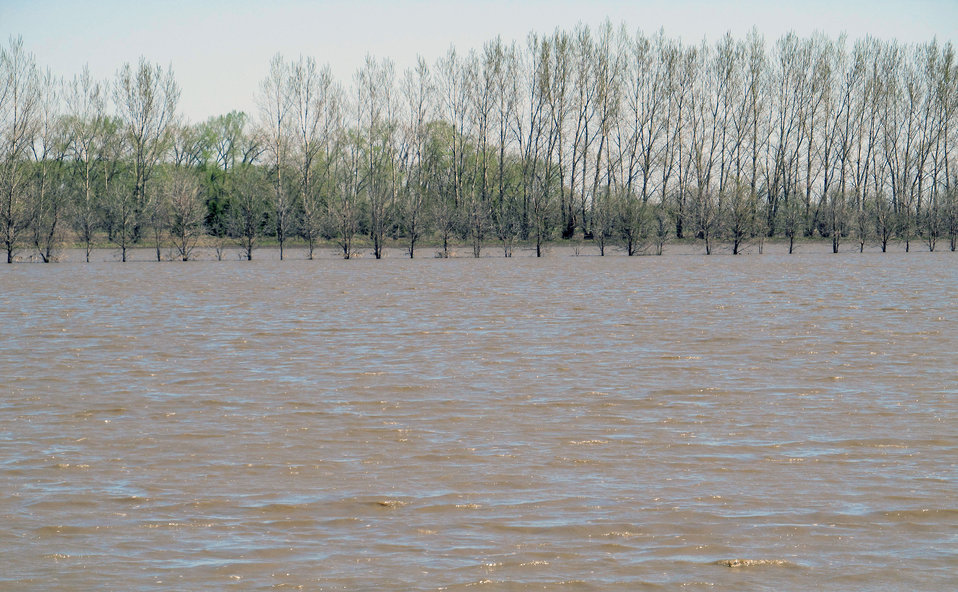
Flooding and water damage in the Park and Tongue River Watersheds located in Cavalier, Pembina and Cavalaier Counties in ND on Thursday, May 23, 2013.